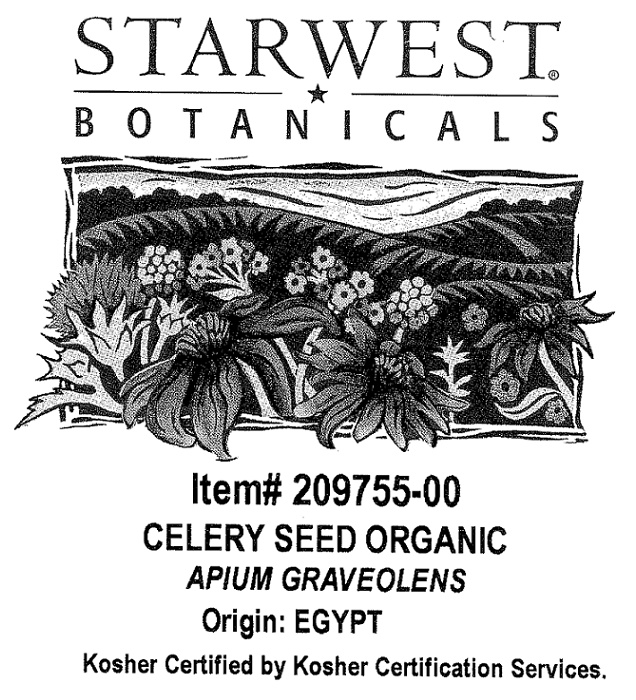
RECALLED - Organic Celery Seed

December 14, 2011 - Starwest Botanicals Recalls Starwest Organic Celery Seed. Due to Potential Salmonella Contamination.